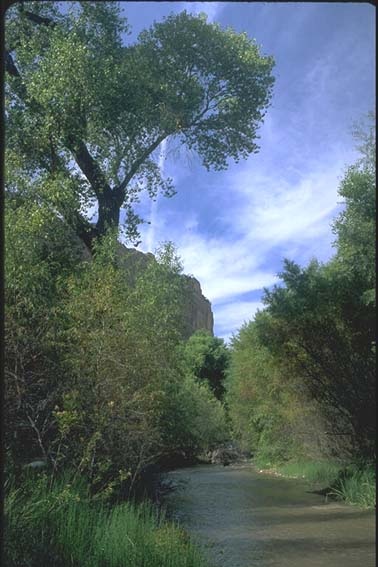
Aravaipa Canyon Wilderness